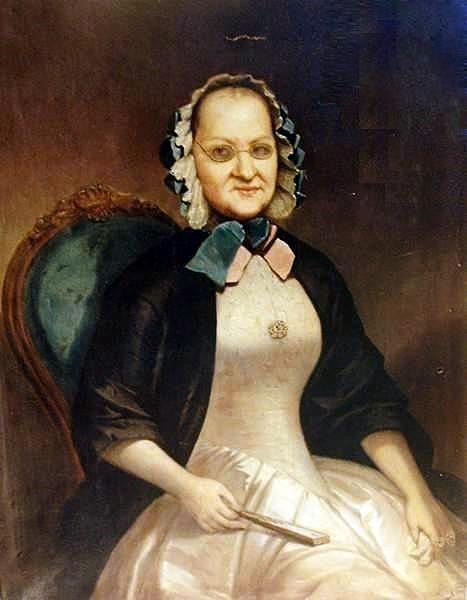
Barandier - Baronesa de Pirahy